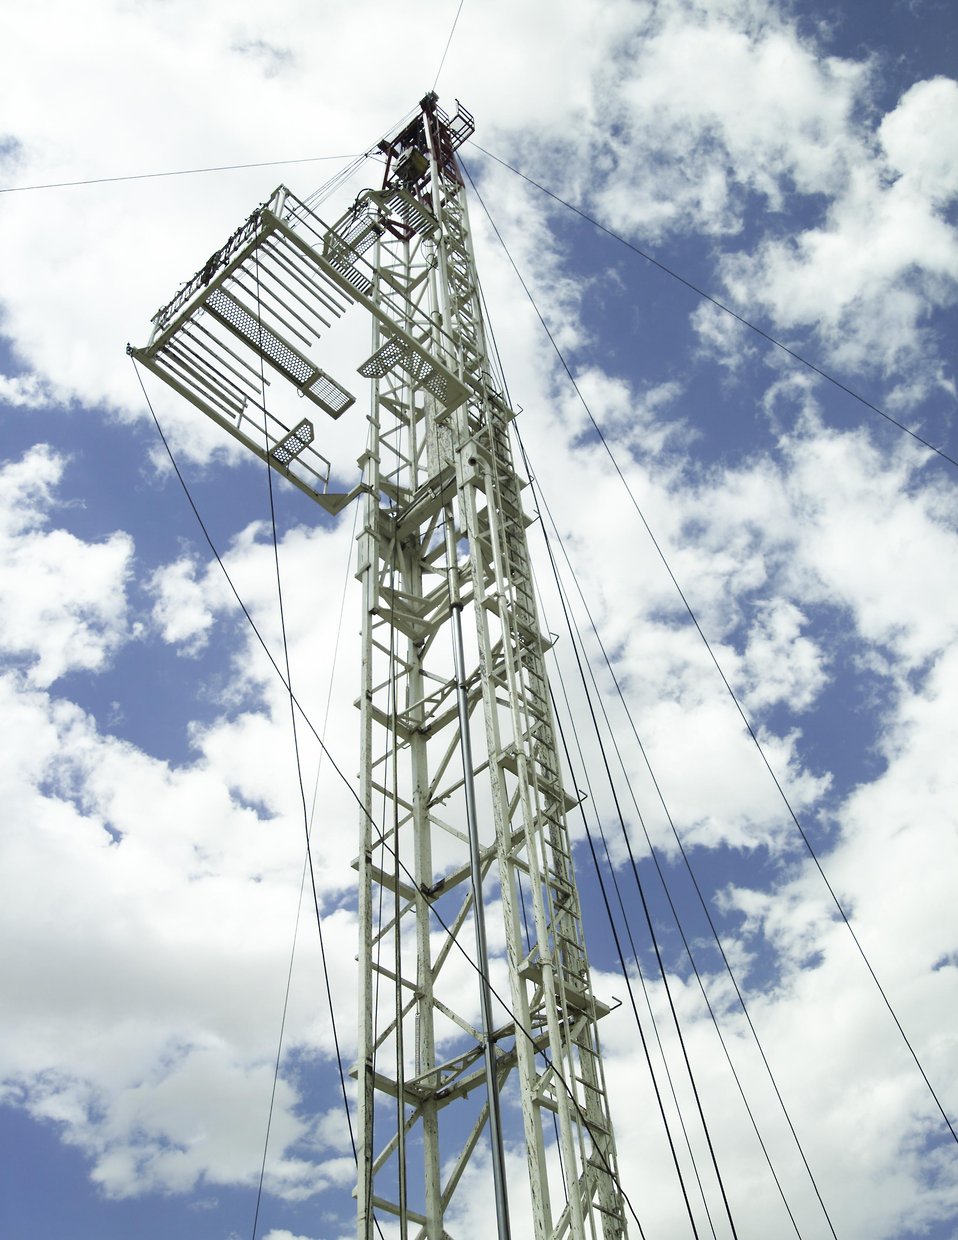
Workover rig at Naval Petroleum Reserve No.3 (NPR-3) near Casper, Wyoming.

The Rocky Mountain Oilfield Testing Center (RMOTC) is a Department of Energy field test site for emerging and developing technologies to address critical energy issues. The field test site, located on Naval Petroleum Reserve No.3 (NPR-3), is a 10,000-acre site. There are approximately 700 well bores with 600 producing wells ranging in depth from 500 to 5,000 feet.